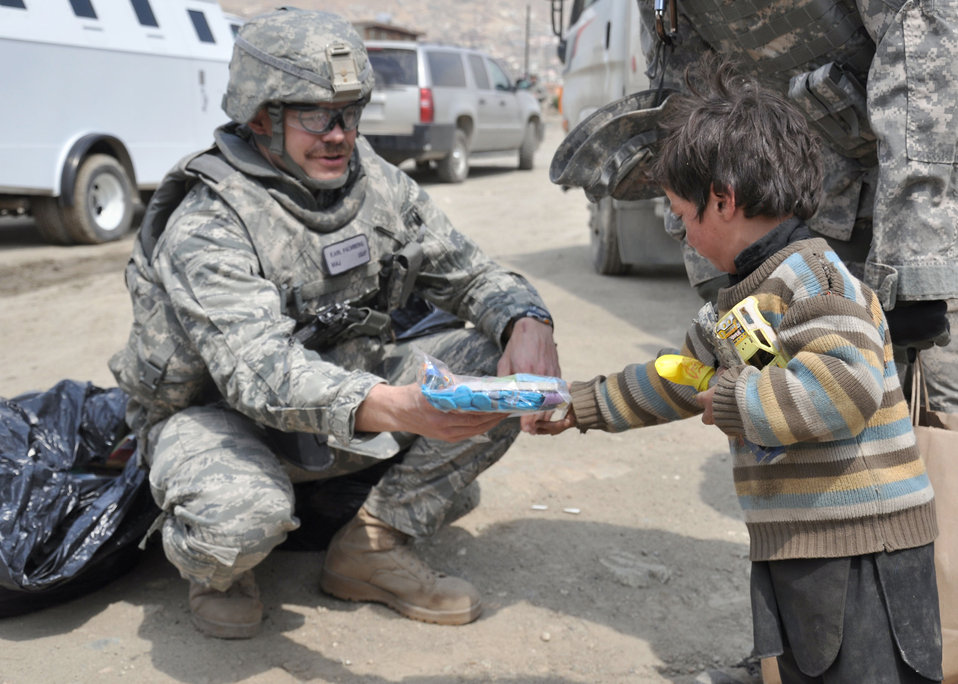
Troops deliver supplies to refugee camp

Maj. Karl Palmberg gives a bag of toys to an Afghan child March 31, 2011, during a volunteer community relations supply donation at a refugee camp in Kabul, Afghanistan. Palmberg is a personnel officer assigned to NATO Training Mission-Afghanistan who is deployed from Luke Air Force Base, Ariz.